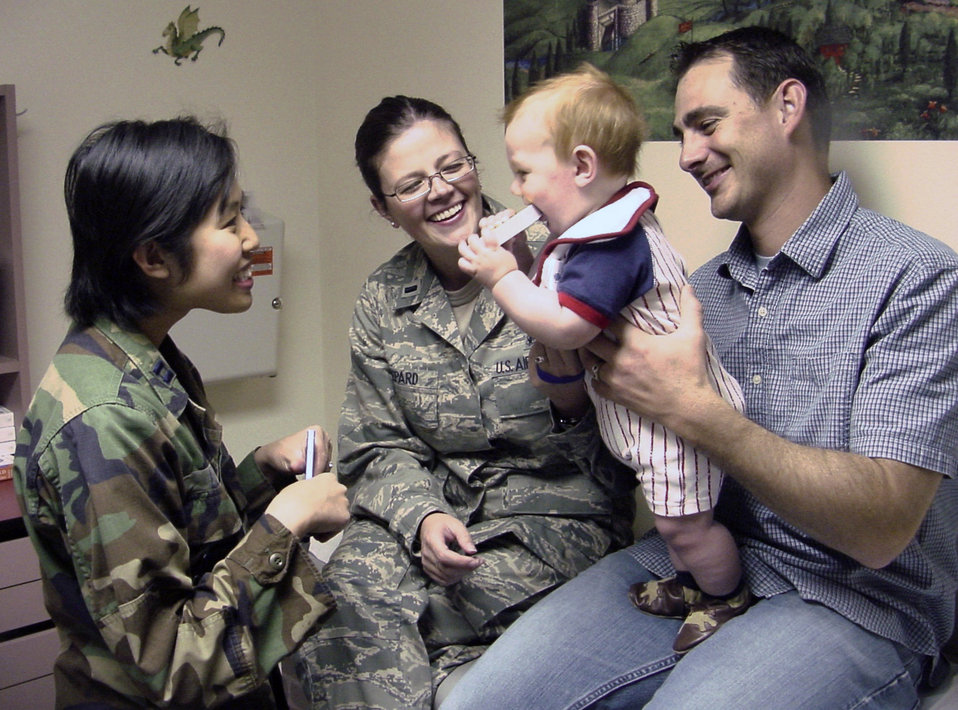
Reading program reaches out to military families

Capt. (Dr.) Minh-Thu Le interacts with her patient, 8-month-old Alexander, as he performs the common newborn ritual of